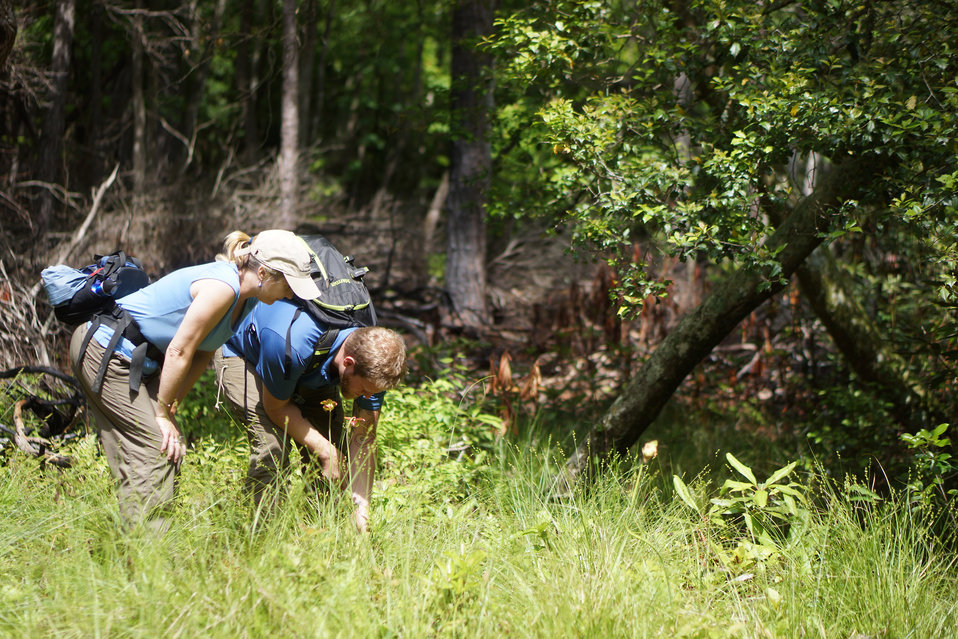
Gabby Lynch and Clint Dewitt

In May, bog conservationists from Tennessee, North Carolina, and Georgia convened in the north Georgia mountains for the spring, 2014 meeting of the Bog Learning Network. The event provided an opportunity for biologists to see, first hand, the result of management efforts at two north Georgia bogs. More importantly, the outings provided an opportunity to share innovative approaches to bog management, such as the role of the Georgia Plant Conservation Alliance in conserving rare plants and coordinating a cadre of volunteers to work on bog management.

The Bog Learning Network was convened in the winter of 2013 as a way to bring together people working for bog conservation across the Southern Appalachians. Southern Appalachian bogs are one of North America’s rarest habitats and home to many rare plants and animals.